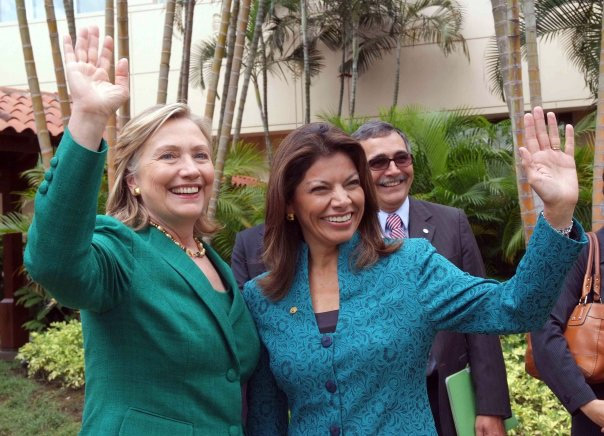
Secretary Clinton With Costa Rican President-elect Laura Chinchilla Miranda

U.S. Secretary of State Hillary Rodham Clinton waves with President-elect Laura Chinchilla Miranda at the Pathways to Prosperity Conference in San José, Costa Rica, March 4, 2010.